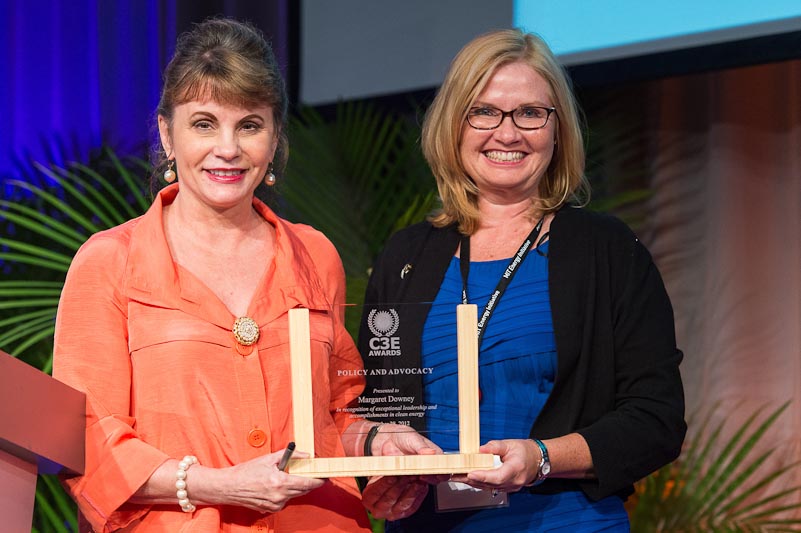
Maggie Downey (on right)

C3E Award Winner, Policy & Advocacy